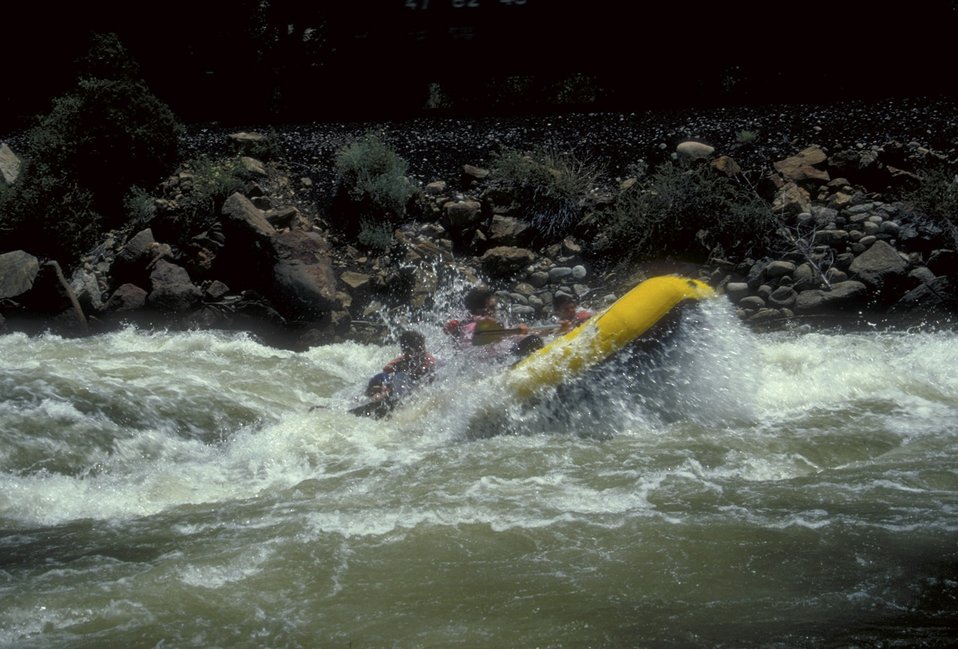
Rapids on the Arkansas River